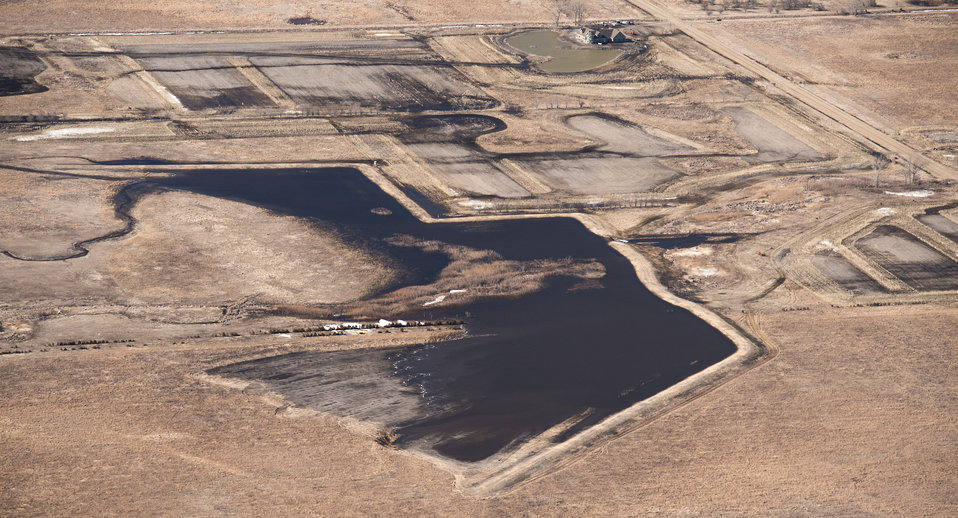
Ehlert North U.S. Department of Agriculture (USDA) Natural Resources Conservation Service (NRCS) Wetland Reserve Program (WRP) in Wilkin County, MN, on Tuesday, April 30, 2013. For information about this and other programs from the USDA Red River Basin Initiative (RRBI) please see www.mn.nrcs.usda.gov/news/features13/RRBI.html.